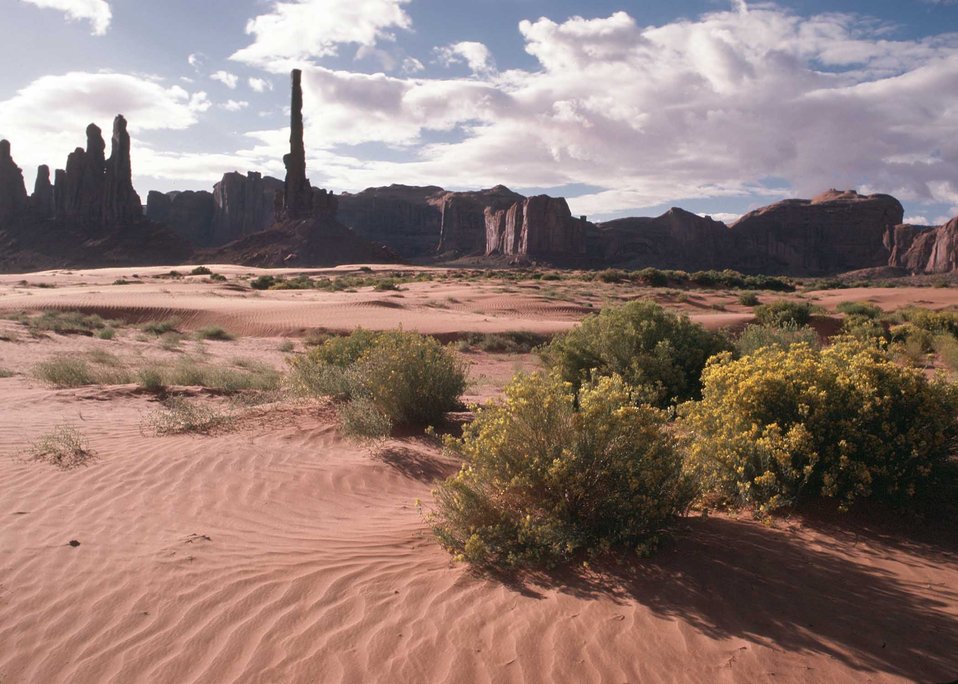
Dry desert and towering sandstone mountains in Monument Valley.